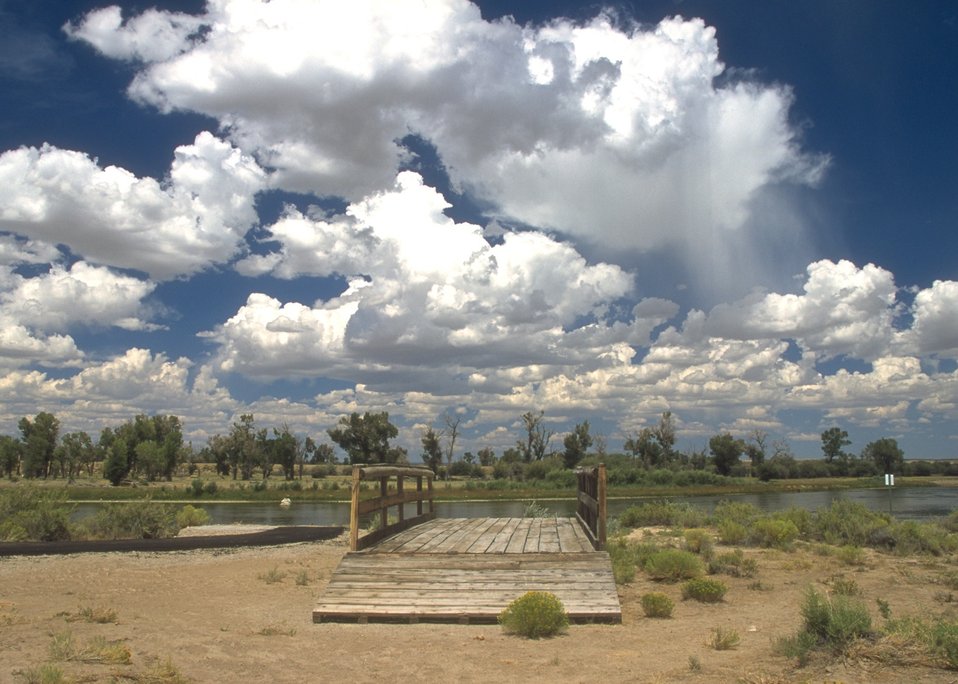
Replica of original ferry that was used for the 1997 Mormon Trail re-enactment crossing the Green River, Rock Springs Field Office.